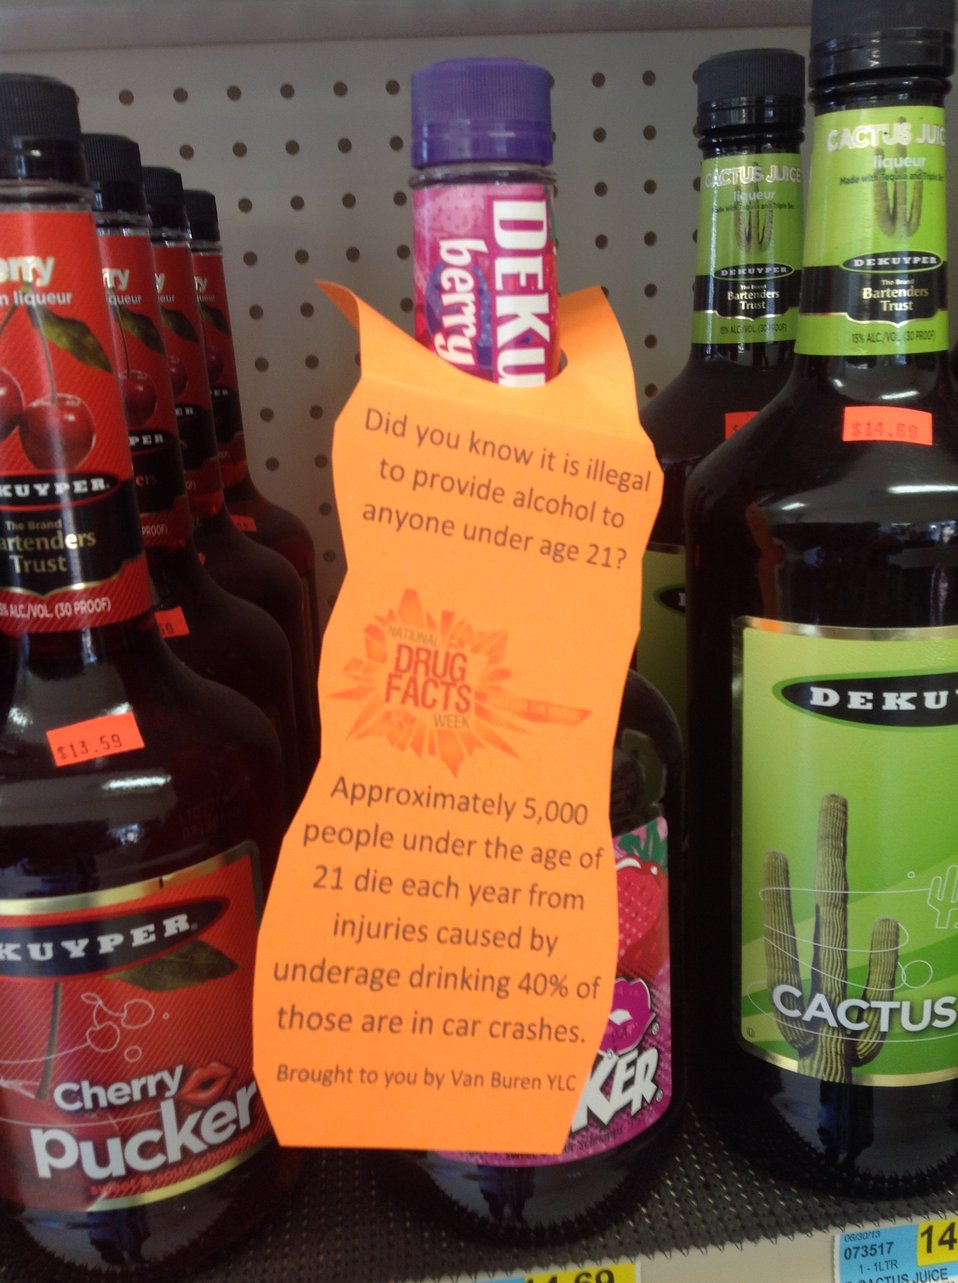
Getting the Word Out

Teenagers from the Van Buren County SAFE Coalition's, Youth Leadership Council (YLC) in Keosauqua, Iowa participate in various events during National Drug Facts Week, 2014.